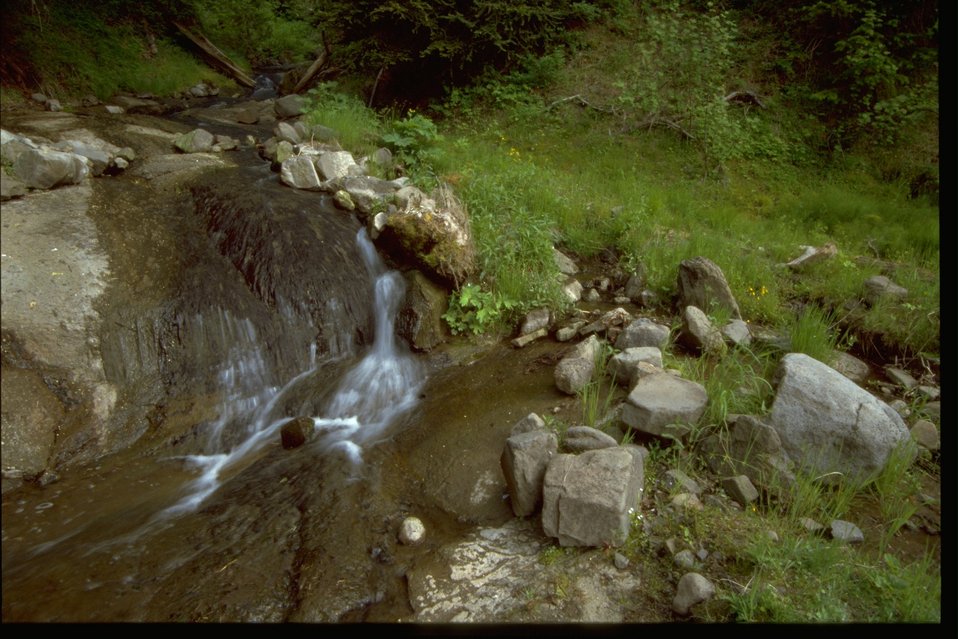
Riparian area and small waterfall in Scotch Creek drainage.